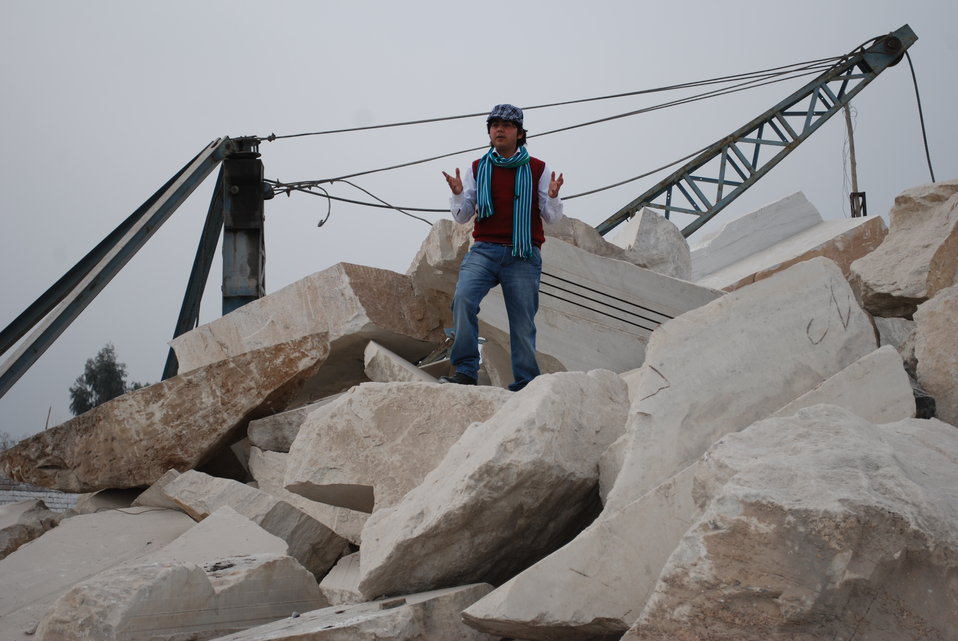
'On the Road' in Nangarhar Province